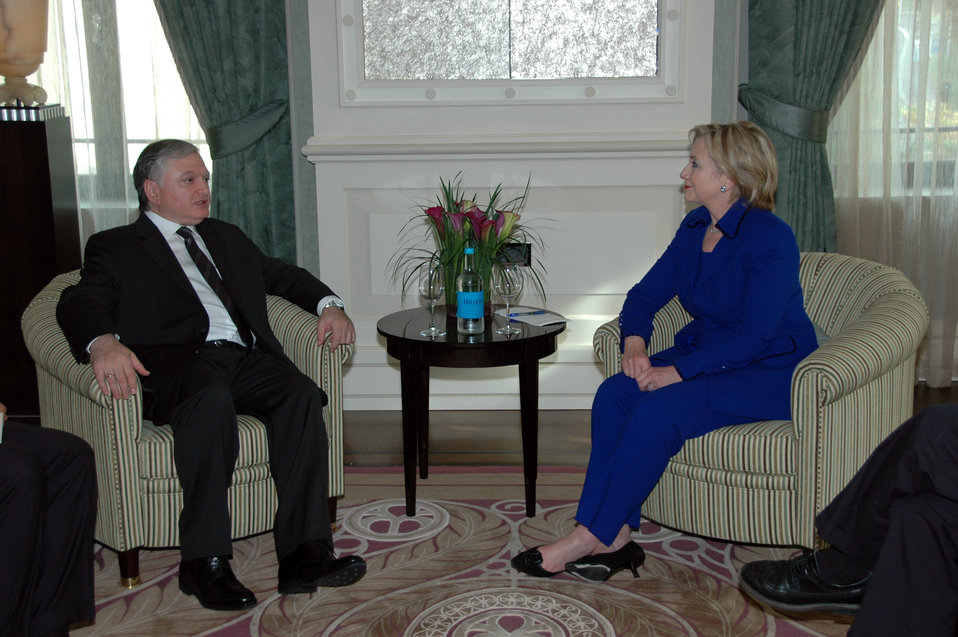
Secretary Clinton Meets With Armenian Foreign Minister

U.S. Secretary of State Hillary Rodham Clinton with Armenian Foreign Minister Edouard Nalbandian in Zurich, Switzerland October 9, 2009.